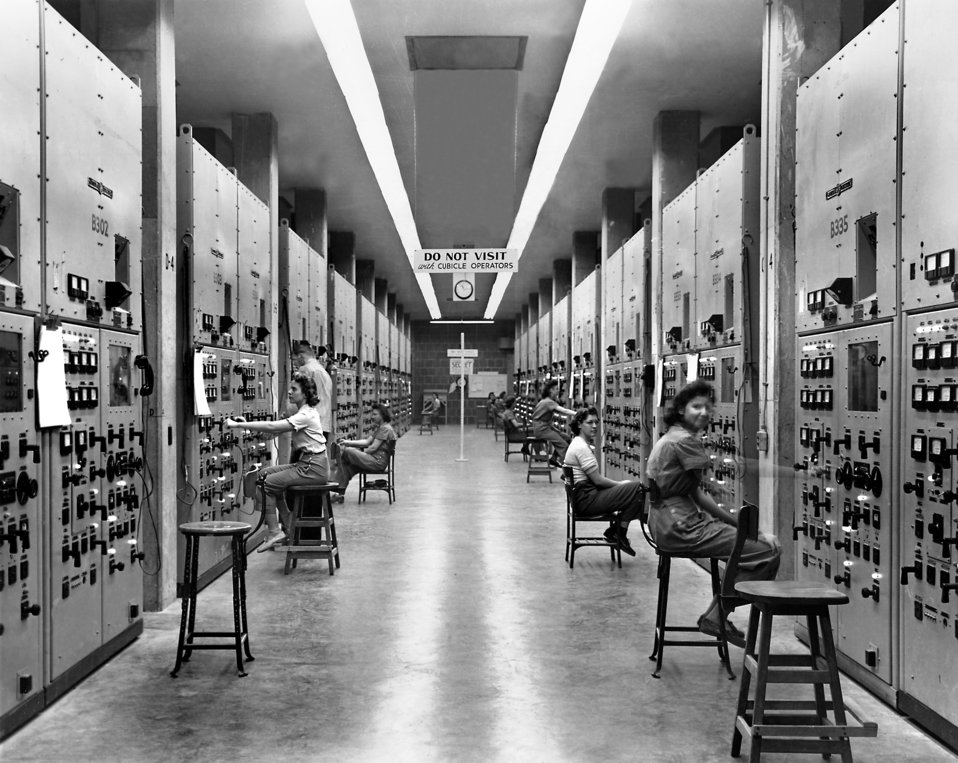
'The Calutron Girls' Y-12 Oak Ridge 1944

Y-12-141 DOE photo Ed Westcott 1944 Oak Ridge Tennessee